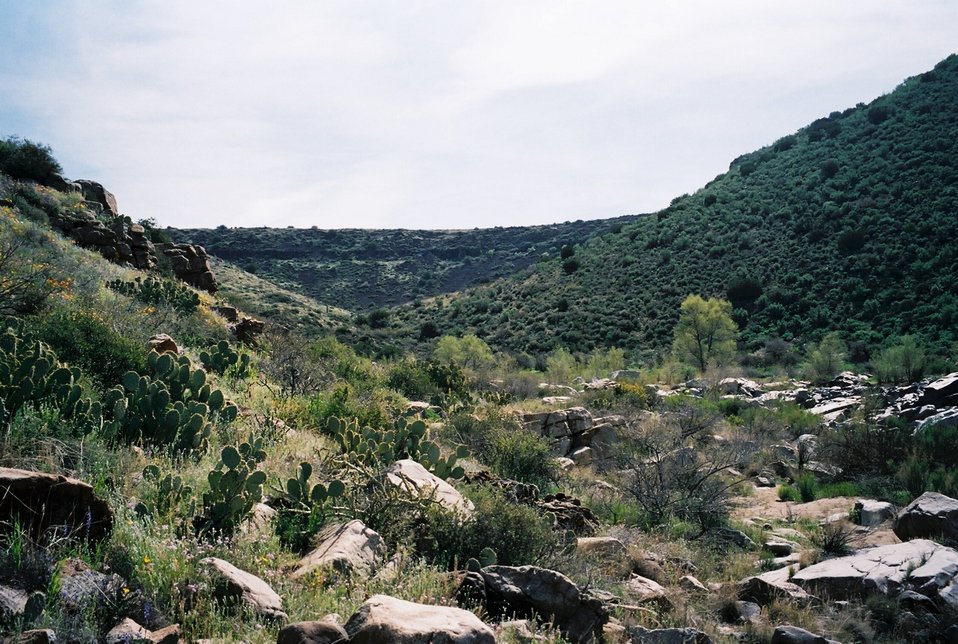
Agua Fria National Monument area.